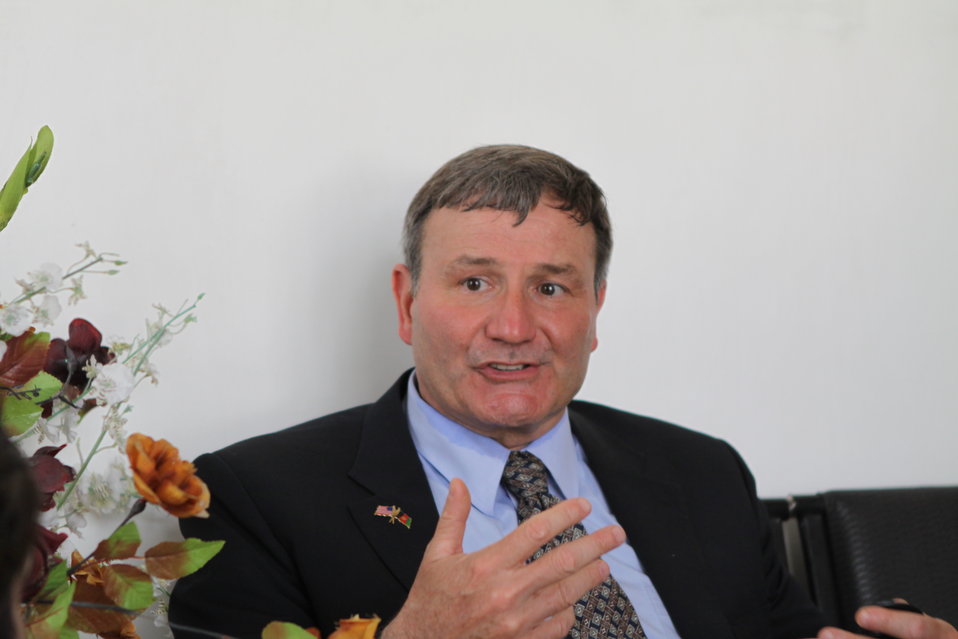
100525 Hirat Marble Conference 864